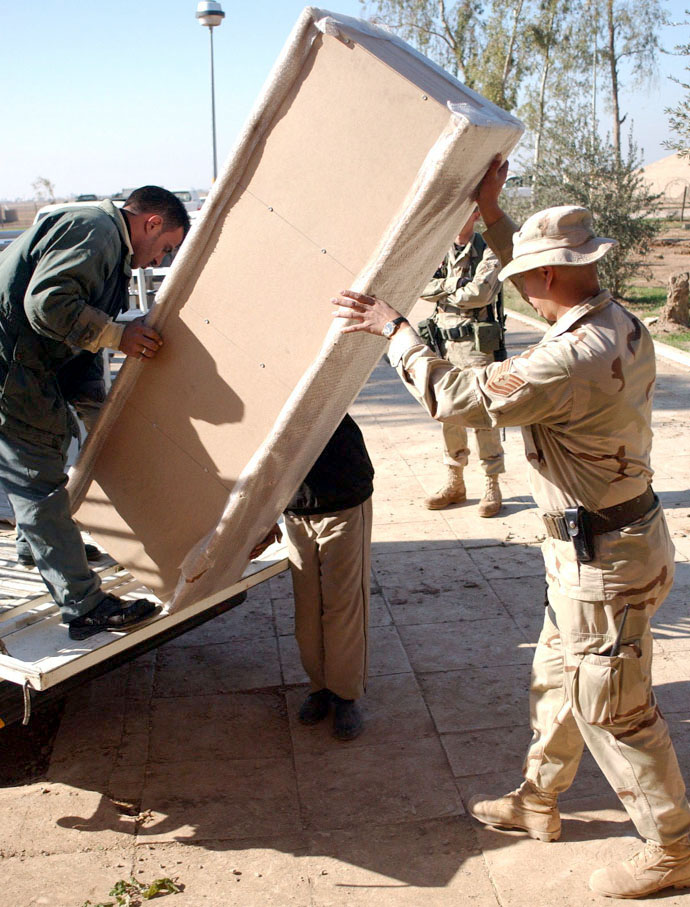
How to spend a million

BALAD AIR BASE, Iraq -- Tech. Sgt. Jim Bane helps a local vendor unload furniture. Contracting officers are not allowed off base, so local vendors must bring samples to contracting officers here as well as deliver the supplies to the base. Sergeant Bane is assigned to the 332nd Expeditionary Contracting Squadron.